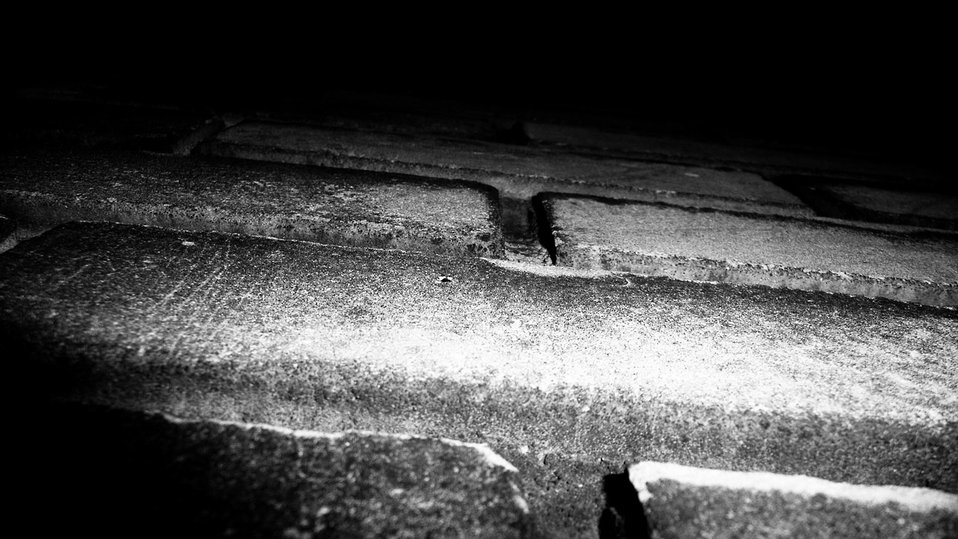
Brick wall at night.